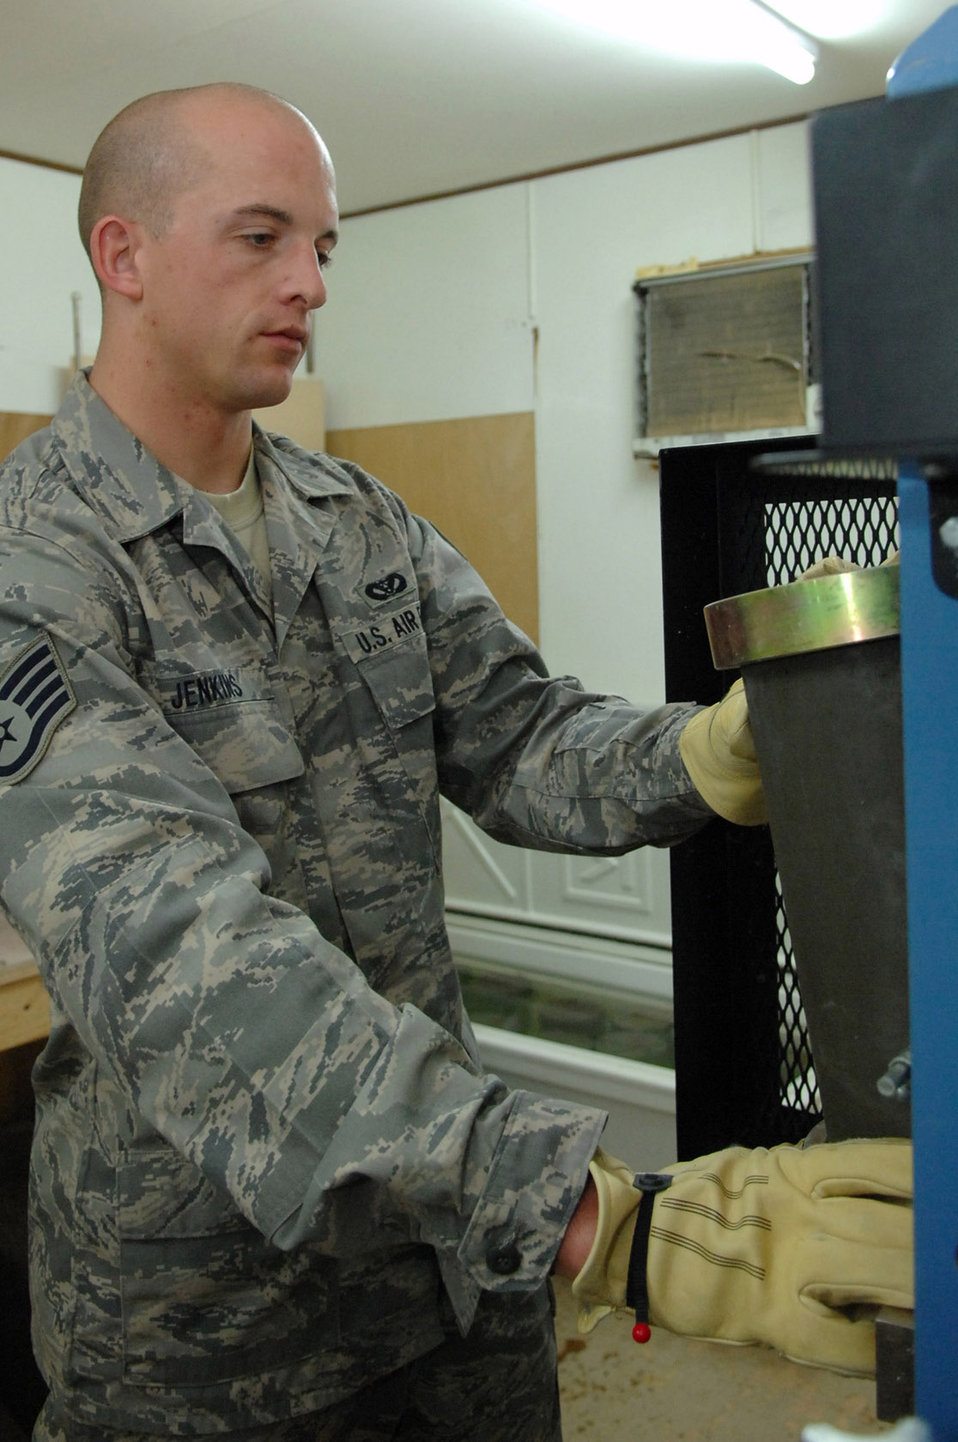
Under pressure

Staff Sgt. Jack Jenkins places a concrete cylinder sample, taken from the new Housing 6 area shoppette foundation, into a strength test machine Feb. 21 at Balad Air Base, Iraq. The machine will compress the sample until it breaks. To pass, the cylinder must withstand compression of 4,500 pounds per square inch. Sergeant Jenkins is a 332nd Civil Engineer Squadron engineering assistant deployed from Ellsworth Air Force Base, S.D.